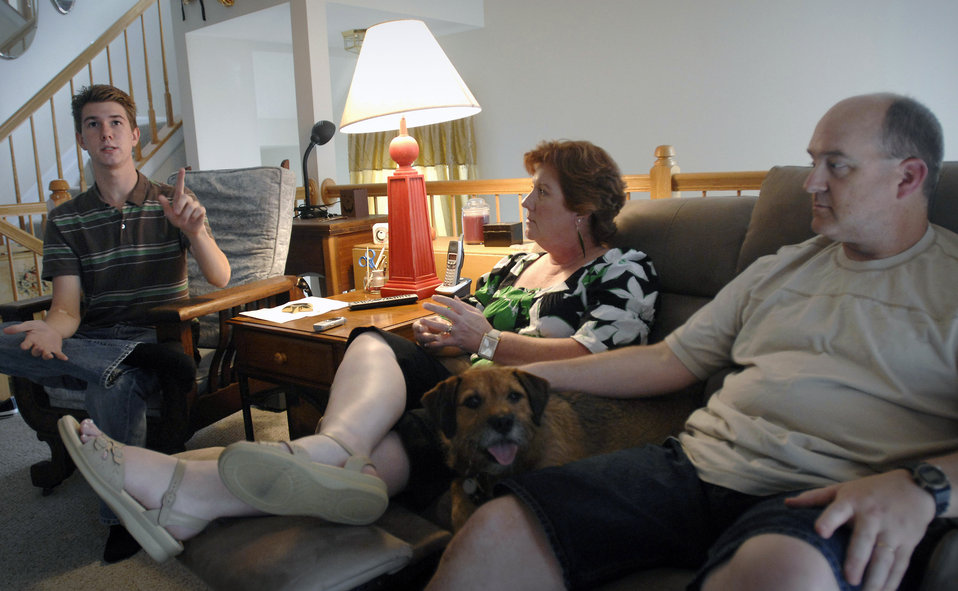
Staying power

Maj. Matthew Conlan's son, Cameron, recounts the recovery process for the family after Major Conlan was seriously injured in Afghanistan in 2005. Also pictured is Major Conlan's wife, Becky.